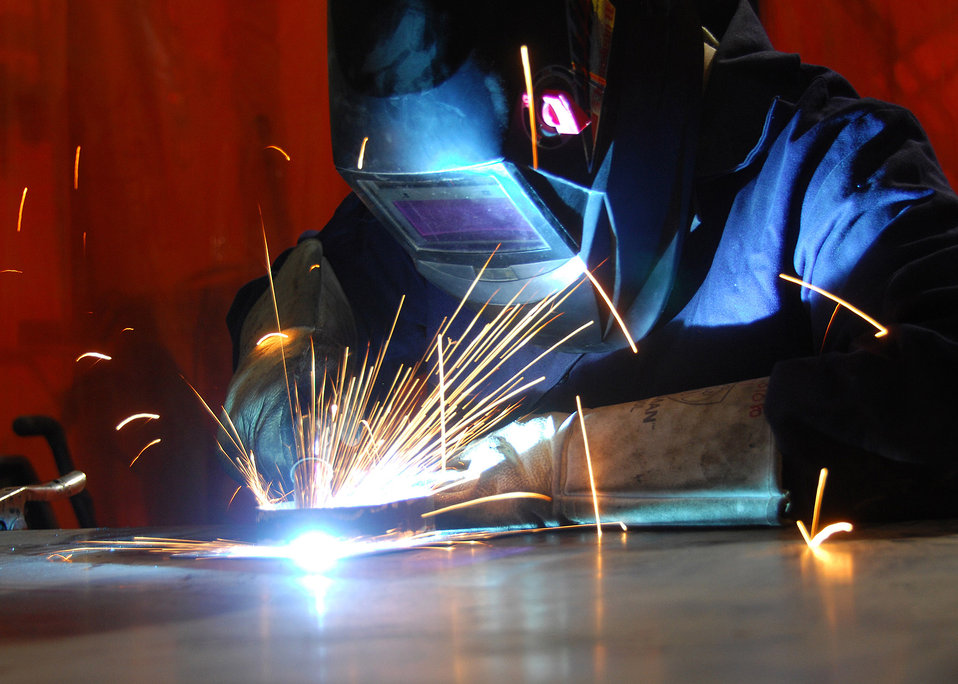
Combat metals

Senior Airman Timothy Jeffers welds pieces of a fuel probe mounting bracket together for a C-130 Hercules Sept. 17 at an air base in Southwest Asia. Members of the combat metals shop perform aircraft sheet metal fabrication, structural repairs and modifications for aircraft. Airman Jeffers is assigned to the 386th Expeditionary Maintenance Squadron combat metals section and deployed from Davis-Monthan Air Force Base, Ariz.